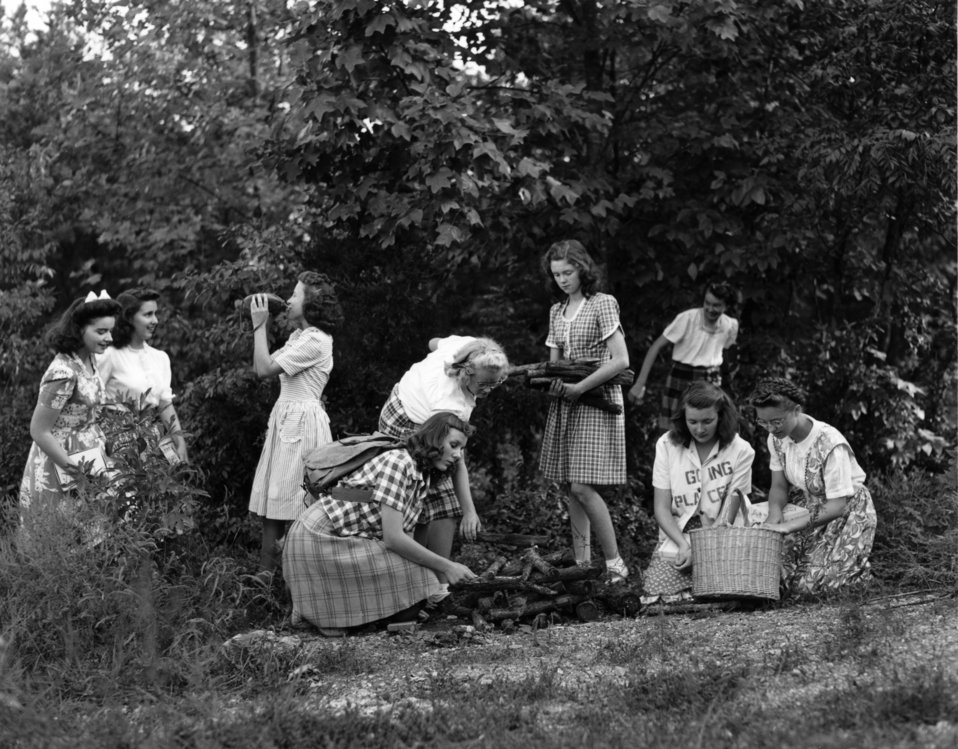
Daily Life at Oak Ridge